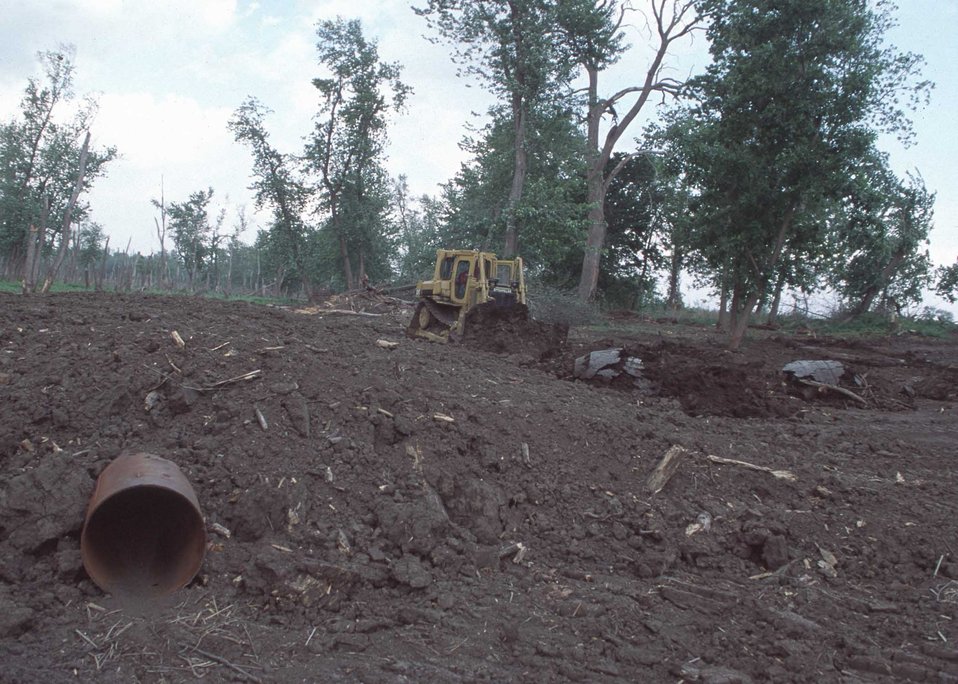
Work begins on the restoration process for a new wetland area on a Cass County, Illinois farm. The land is adjacent to the Illinois River.